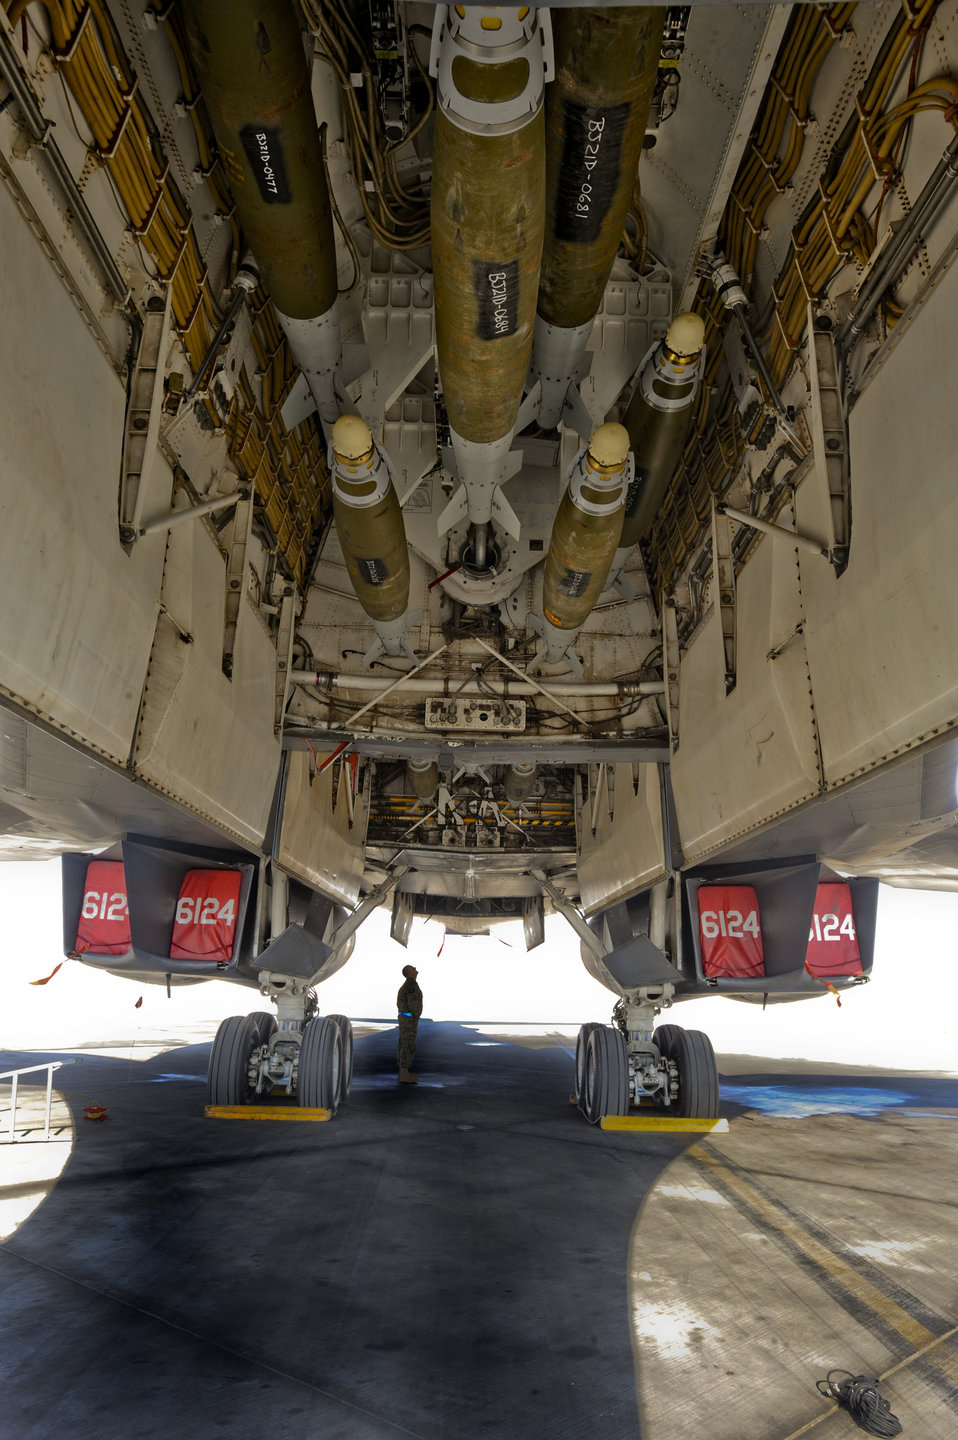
Airmen keep B-1B ready for bombs on target

The bomb bay of a B-1B Lancer is loaded and ready for another mission Jan. 29 at an air base in Southwest Asia. The B-1B is deployed from Dyess Air Force Base, Texas, in support of operations Iraqi Freedom and Enduring Freedom and Combined Joint Task Force-Horn of Africa.